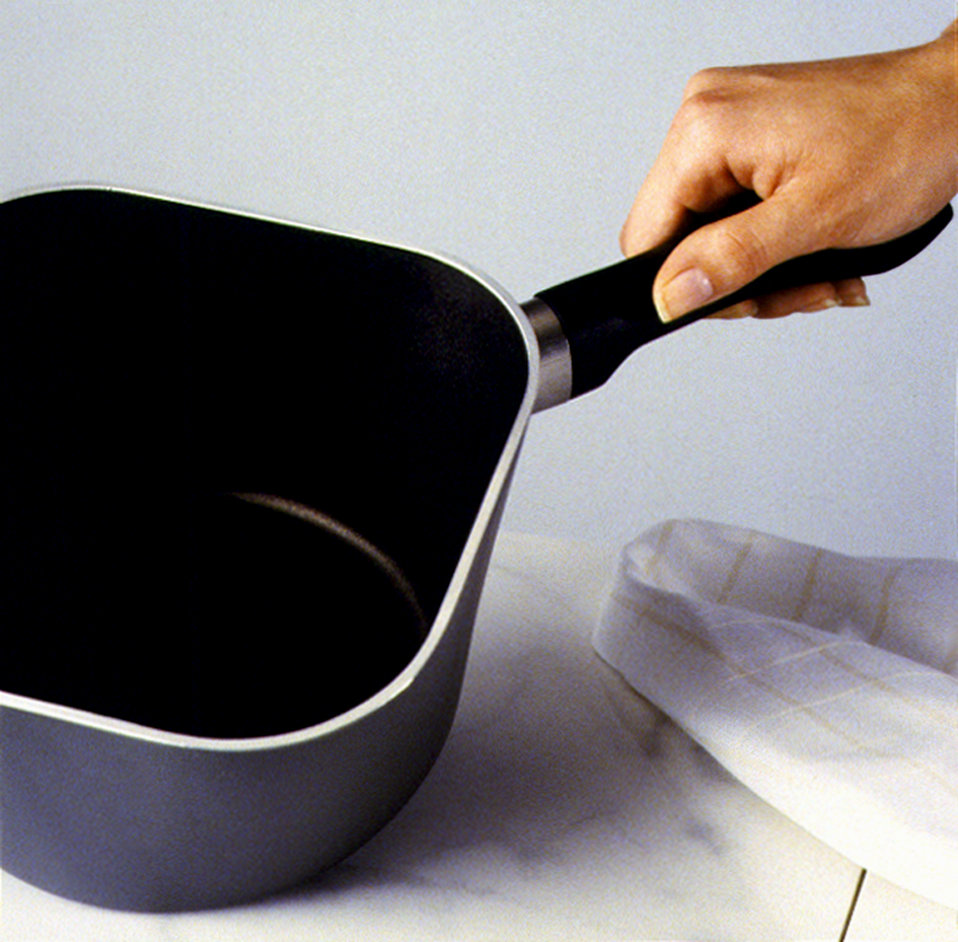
This was one of six images (PHIL# 9125 - 9130) depicting an Allegro� Cookware pot by Mirro�, the design of which was a radical departure from traditional cooking utensils. The square shape, unique lid and lightweight materials offered many ergonomic advantages. All the pots, pans and skillets were circular on their bottoms, gradually becoming square toward their tops. This cookware design made the most efficient use of standard round heat sources while at the same time offered greater cubic volume than a circular pot of the same height. Two of the corners created natural pouring spouts, a design consideration that was implemented in response to complaints common with more traditional round cookware. Handles located on the alternate two corners of the pot, aligned and interlocked with the lid handles providing safe and balanced handling.